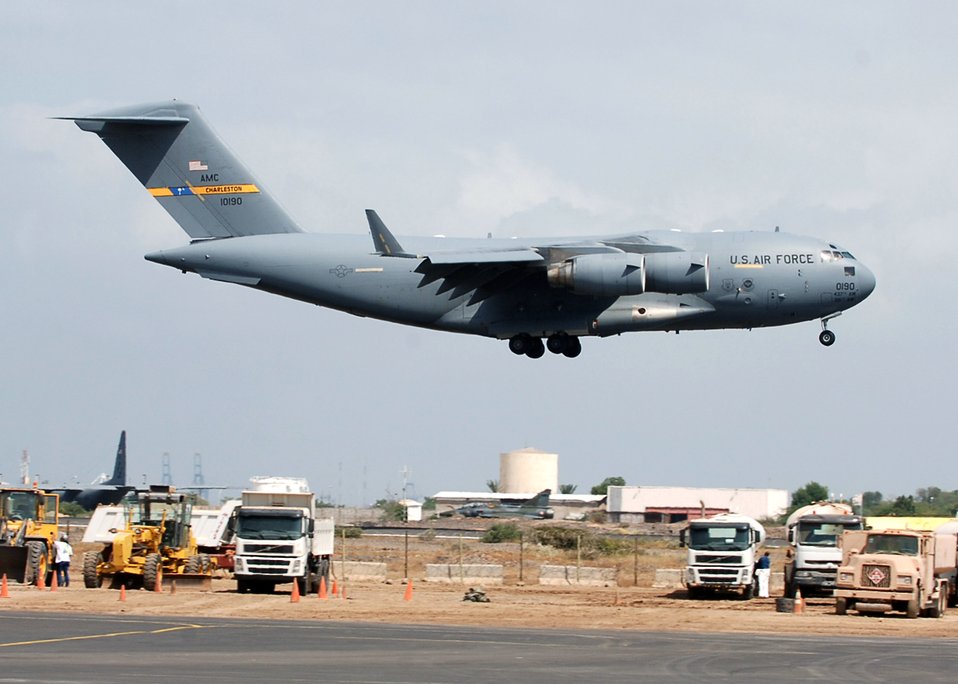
CENTAF Airpower summary for March 1

Air Force C-17 Globemaster IIIs, like this one, are capable of rapid strategic delivery of troops and all types of cargo to main operating bases or directly to forward bases in a deployment area.